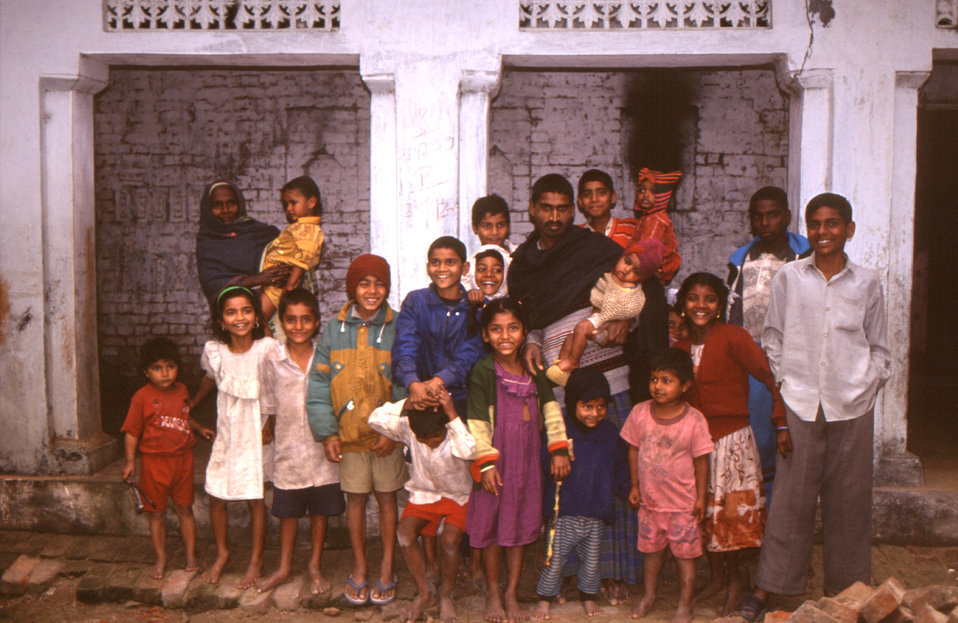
This 2000 photograph depicted a gathering of Indian family members posed outside their home, where they'd been visited by polio eradication team members, who'd suspected the presence of a polio case, and were therefore, investigating all family members.The image was provided by Chris Zahniser, B.S.N., R.N., M.P.H., a STOP Transmission of Polio (STOP) immunization initiative team member and photographer. Ms. Zahniser was at the time assigned to the state of Uttar Pradesh in northern India, and spent three months working in the Districts of Gorakhpur and Deoria.